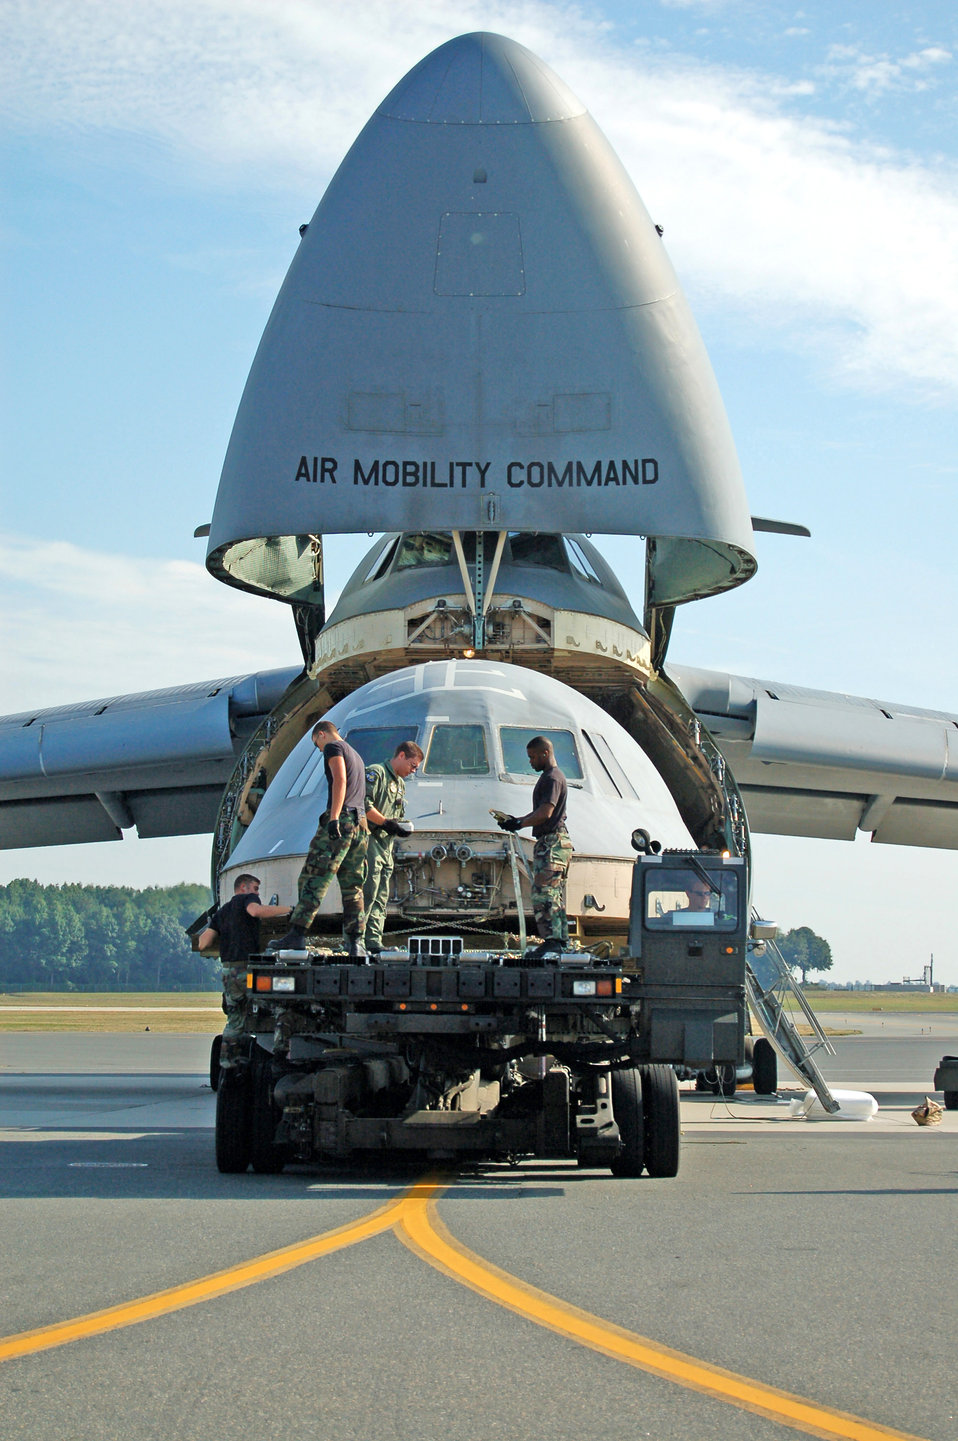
Salvaged flight deck from C-5 mishap becomes tool

(Left to right) Staff Sgt. John Rollins, Airman 1st Class Shain Brower, Staff Sgt. Stuard Smith II and Senior Airman Joseph Moseley load a C-5 Galaxy flight deck onto another C-5 for transport to Robins Air Force Base, Ga. The flight deck from the C-5 that crashed April 3 will be used to as a training simulator. Sergeant Rollins and Airmen Brower and Moseley are assigned to the 436th Aerial Port Squadron; Sergeant Smith is with the 9th Airlift Squadron.